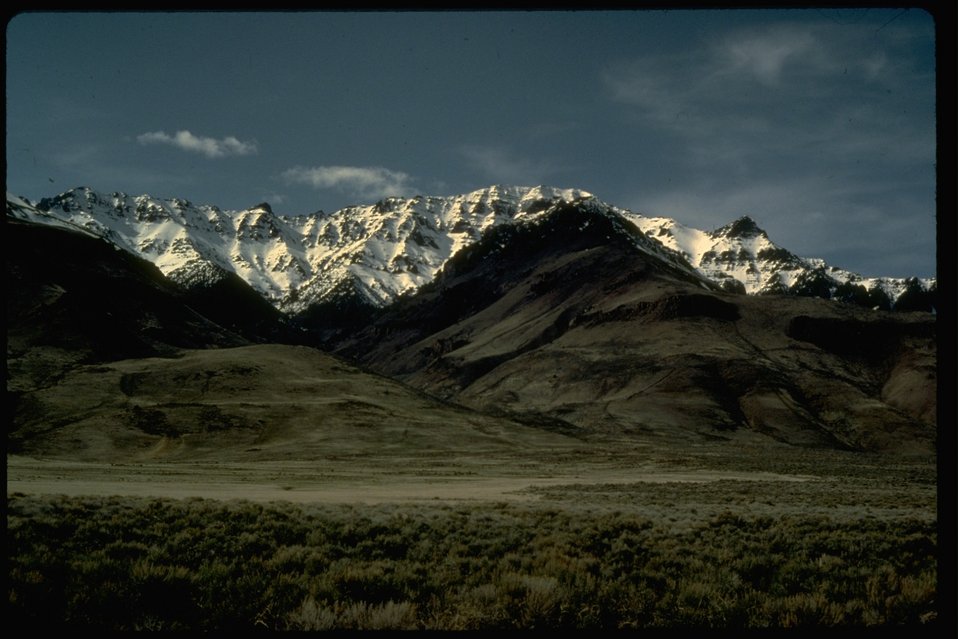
East face of the Steens. OR 2-85F